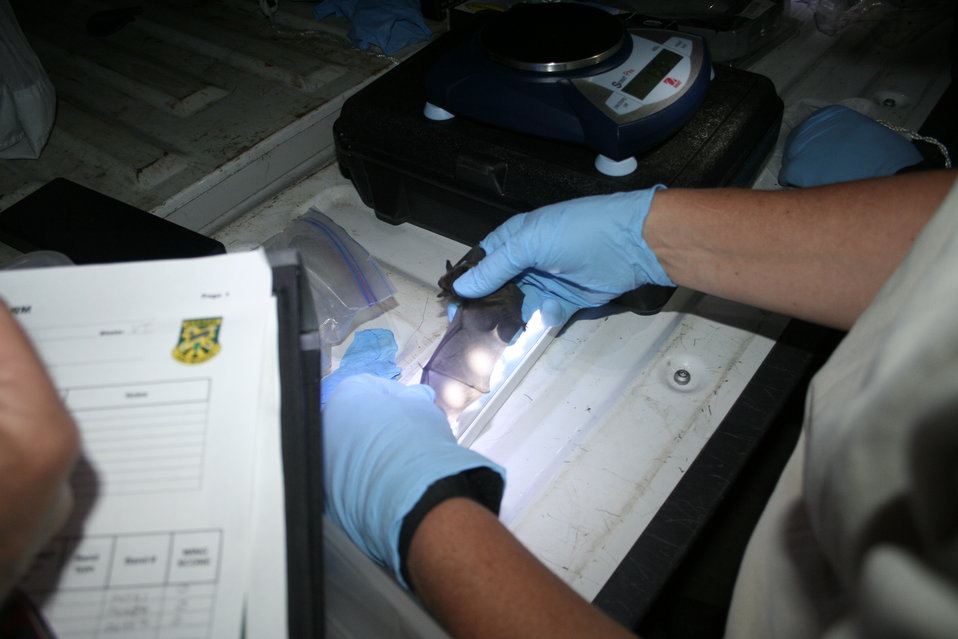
Biologist inspects bat wing for signs of WNS

USFWS and VT DFW biologists inspect bats for lingering signs of white-nose syndrome.

The disease only affects hibernating bats in winter, but bats that survive may exhibit damage to wings.